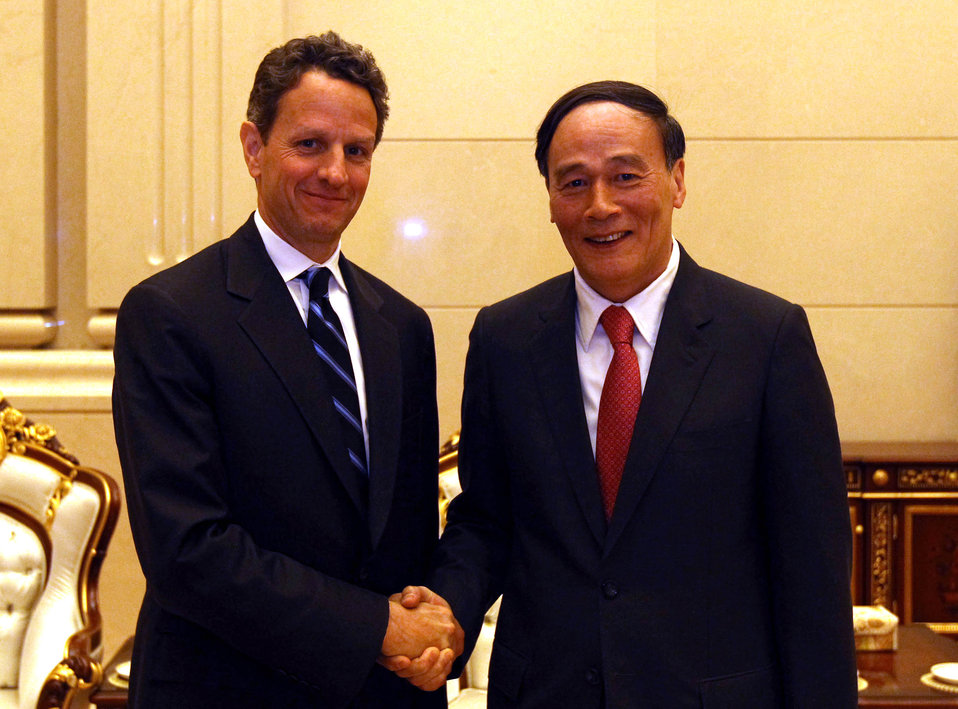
Chinese Vice Premier Wang Qishan

Treasury Secretary Tim Geithner and Chinese Vice Premier Wang Qishan in Beijing, China on Thursday, April 8, 2010.